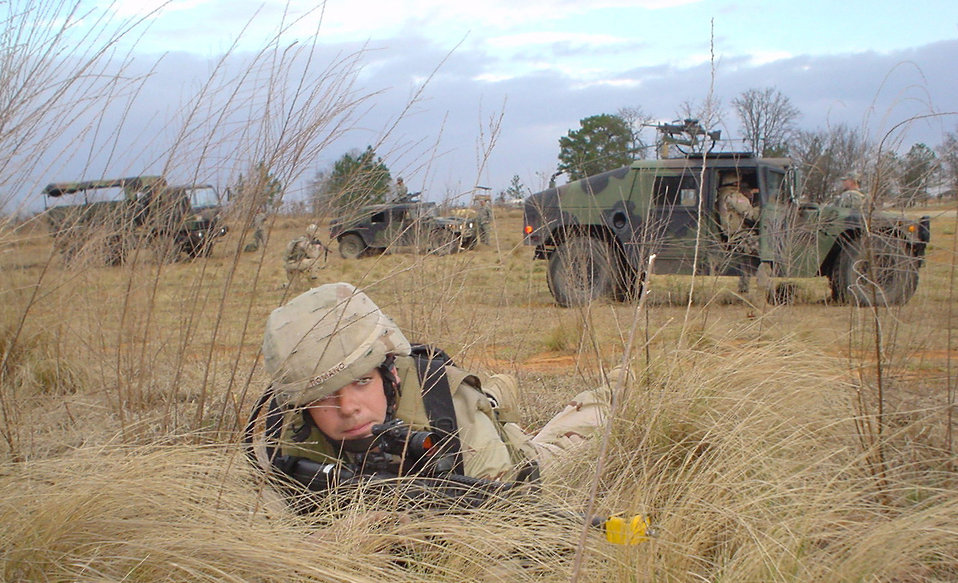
Putting the 'battle' in battlefield Airman

Senior Airman Tom Romano guards a convoy's perimeter during combat training at Fort Bragg, N.C., on Monday, March 27, 2006, before deploying to Afghanistan. Airman Romano volunteered for a year-long deployment with the Bagram Provincial Reconstruction Team. He is a security forces specialist from Minot Air Force Base, N.D.